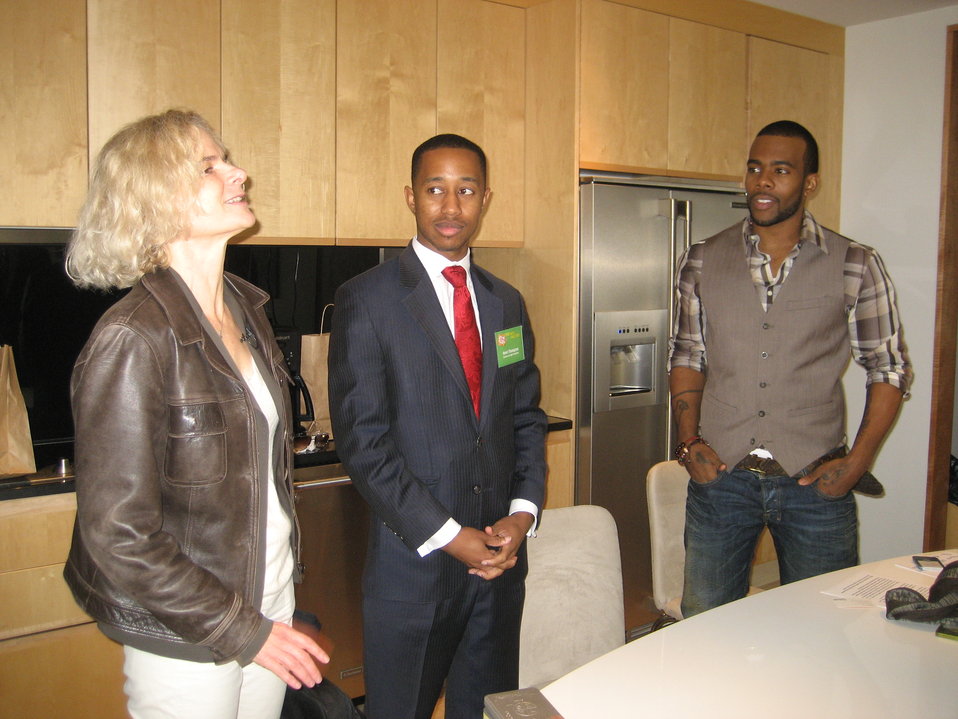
Mentor 26